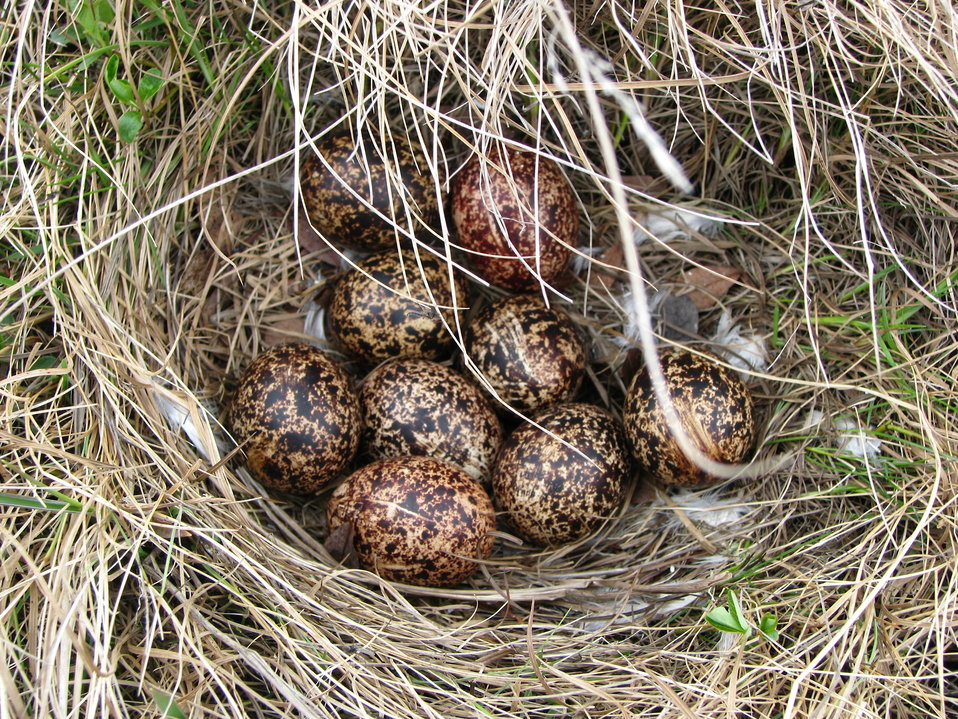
Ptarmigan nest filled with eggs

Yukon Delta NWR